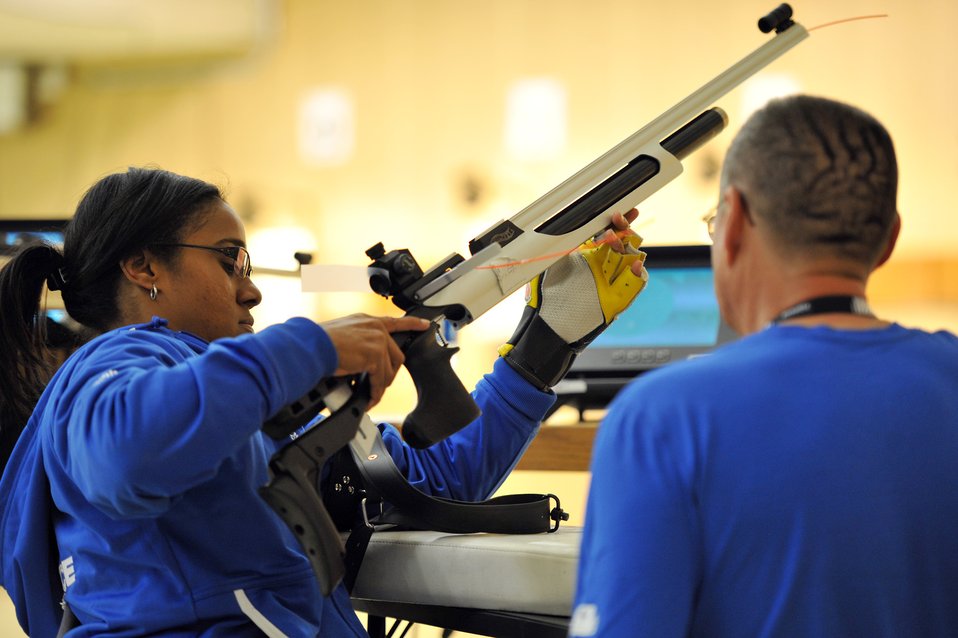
prelims shooting competition

Chatriex Goodson prepares to take aim in the shooting competition of the 2011 Warrior Games May 17, 2011, at the U.S. Olympic Training Center in Colorado Springs, Colo. More than 200 wounded warriors from all the military services are competing in Paralympic-style athletic events May 16 through 21.